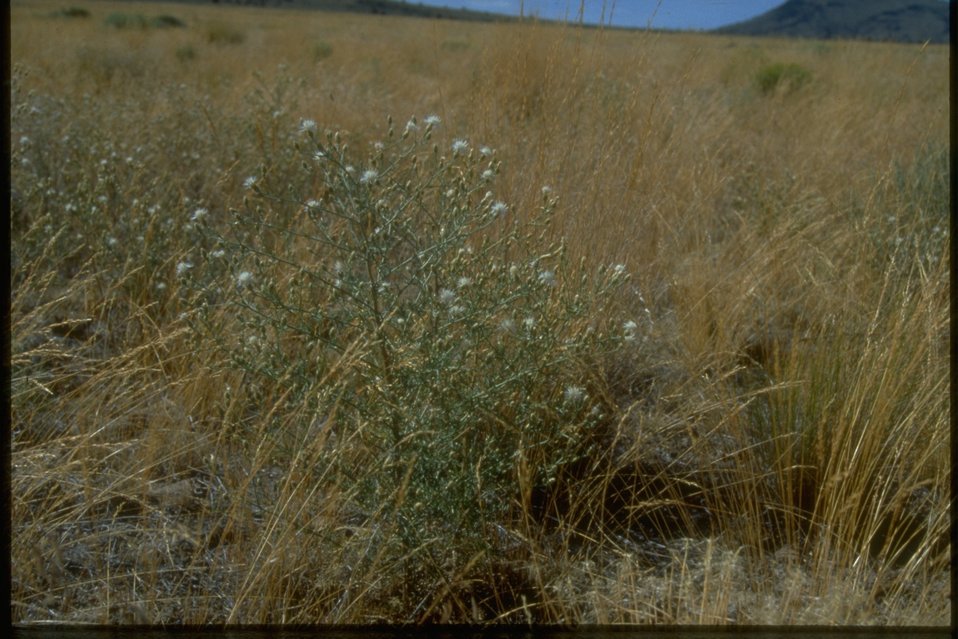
Diffuse Knapweed in bunchgrass community near Glass Butte.